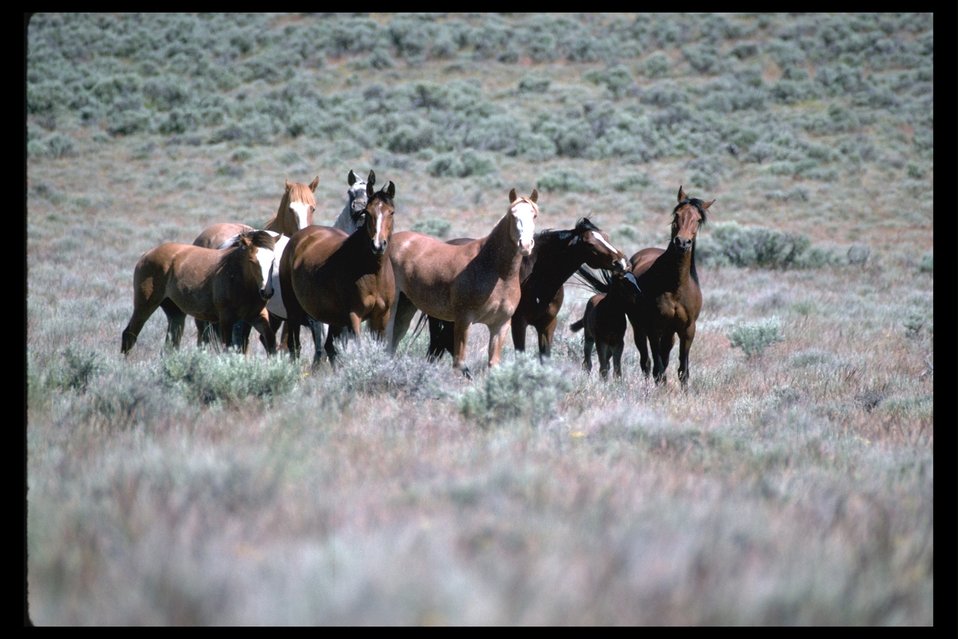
Undetermined.